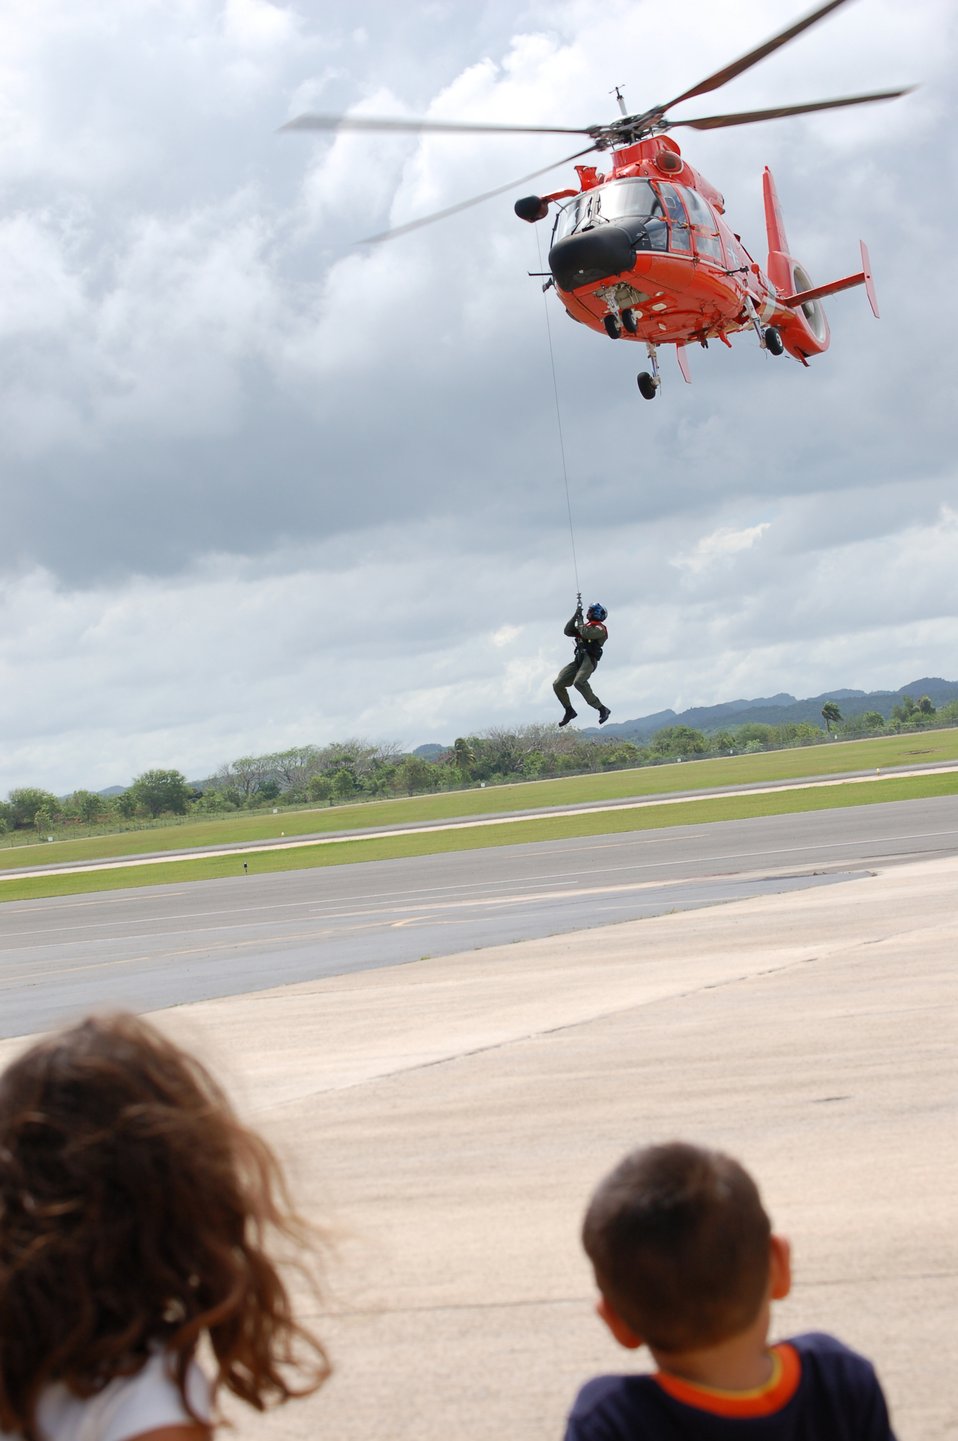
Visit

A Coast Guard HH-65C Dolphin crew demonstrates the helicopter's capability to hoist a person up into the helicopter during a March 22 open house at Coast Guard Air Station Borinquen, Puerto Rico. Approximately 500 visitors got a firsthand look at today's military members and equipment in Puerto Rico, and to see an historic C-54 cargo plane used during the Berlin Airlift.